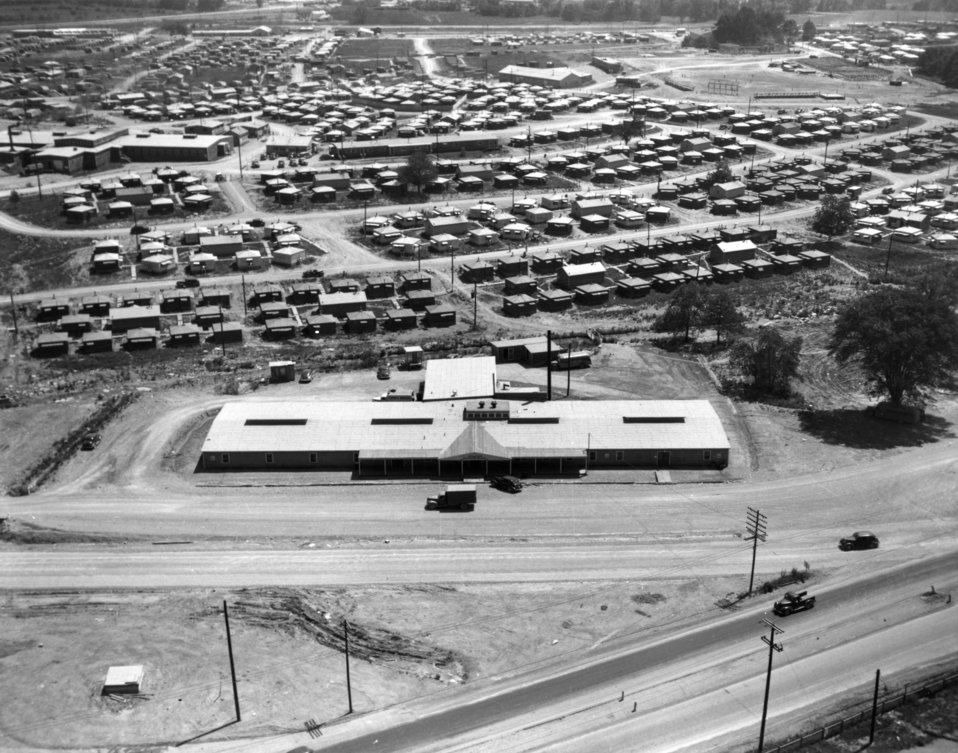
Aerial of Oak Ridge